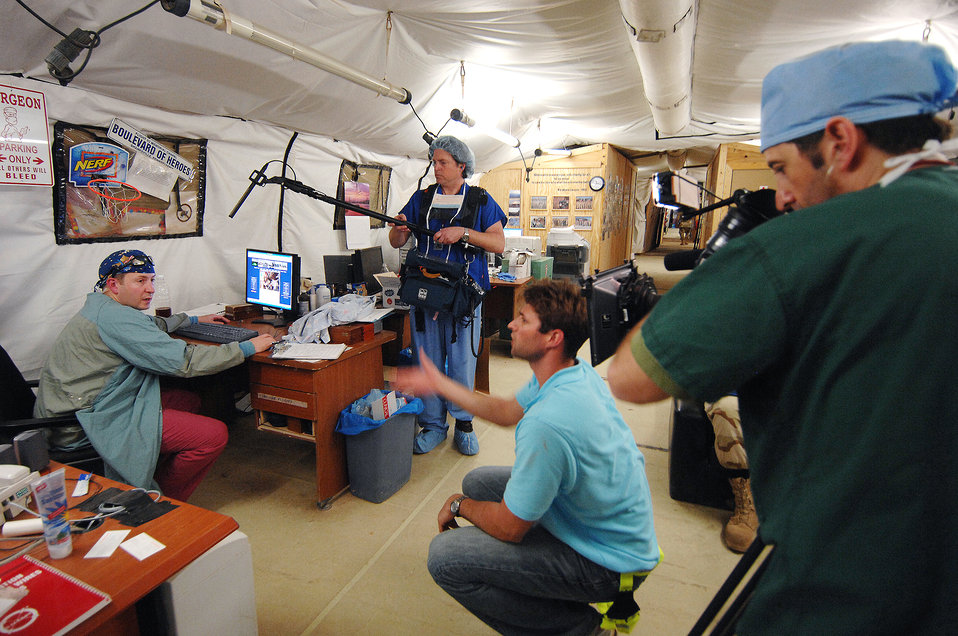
National media visit Air Force Theater Hospital in Balad

Discovery Channel videographer Joel Schwarzberg (right), producer Brent Henderson (kneeling), and sound mixer Kenny Liston (standing), conduct an interview Feb. 22 with Lt. Col. (Dr.) Jerry Pratt, a cardio-thoracic surgeon for the Air Force Theater Hospital at Balad Air Base, Iraq. The production crew is capturing imagery and interviews for the Discovery Channel series,